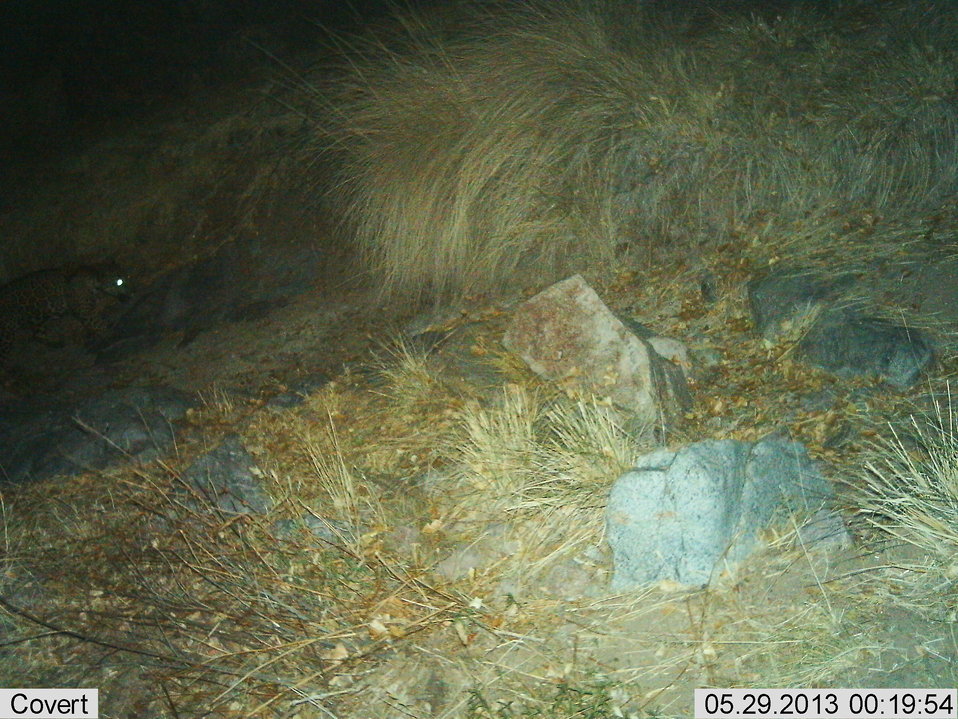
Male jaguar photographed by automatic wildlife cameras in the Santa Rita Mountains on May 29, 2013, as part of a U.S. Fish and Wildlife Service/Department of Homeland Security-funded jaguar survey conducted by University of Arizona. Comparison of pelage markings with other photos confirms that this is the same jaguar that has been repeatedly photographed in the survey area in the Santa Rita Mountains. The jaguar has been photographed previously from this location.